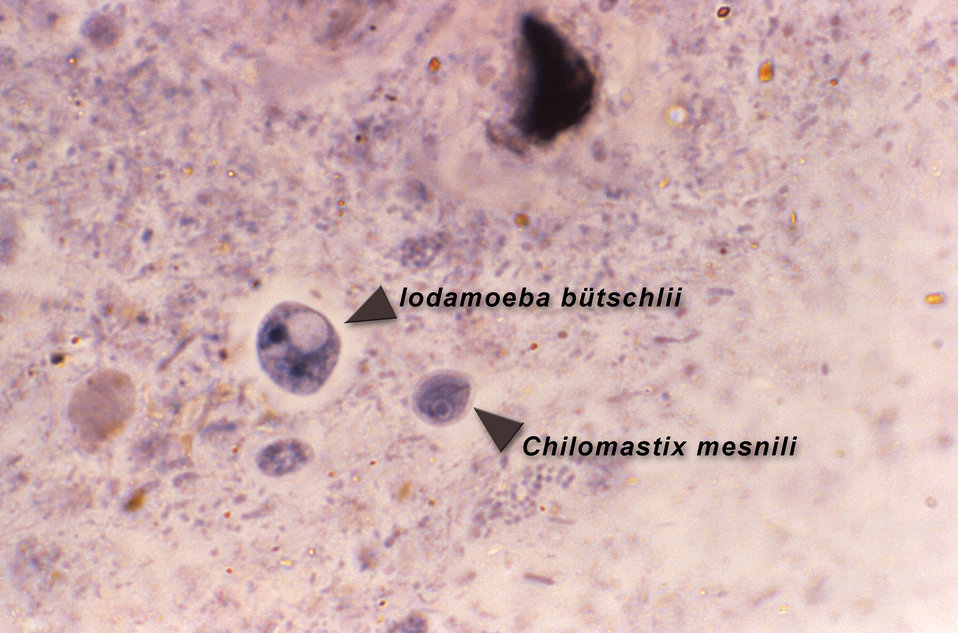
This iron-hematoxylin-stained photomicrograph revealed the presence of two parasitic cysts, an Iodamoeba b�ii, and a Chilomastix mesnili